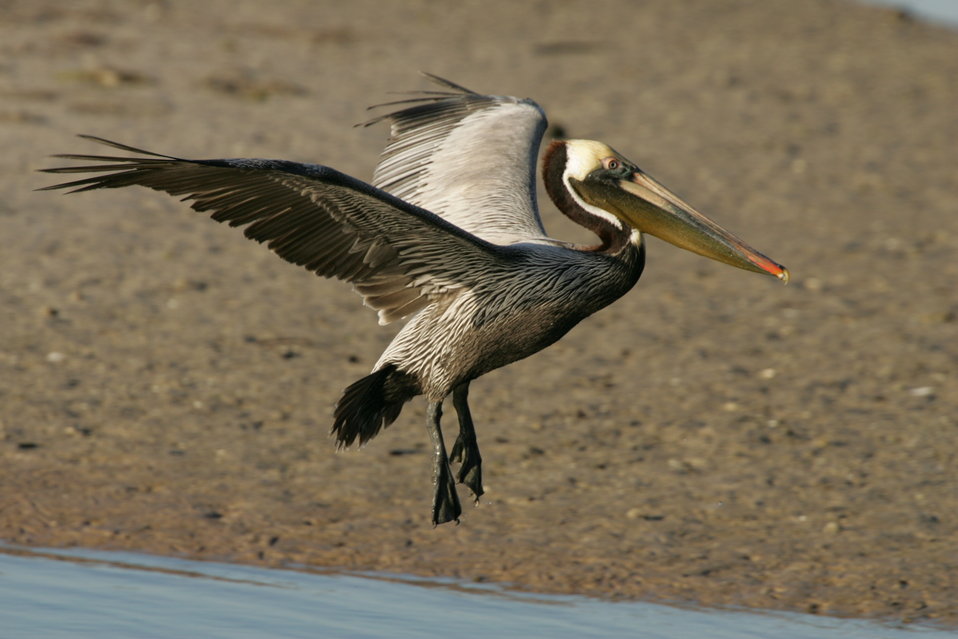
Brown Pelican, J.N. 'Ding' Darling NWR